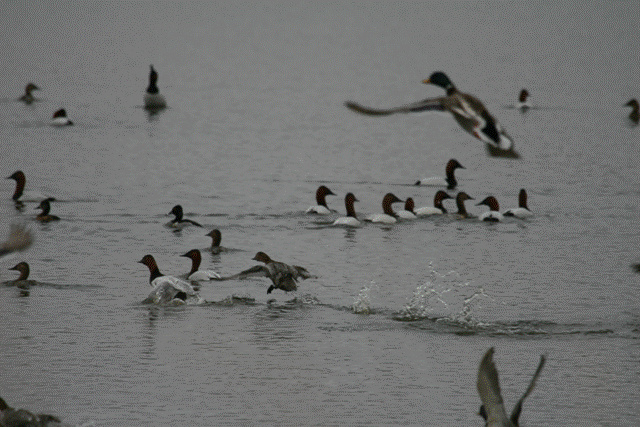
Diver Ducks Swimming

Mallard is shown in flight.